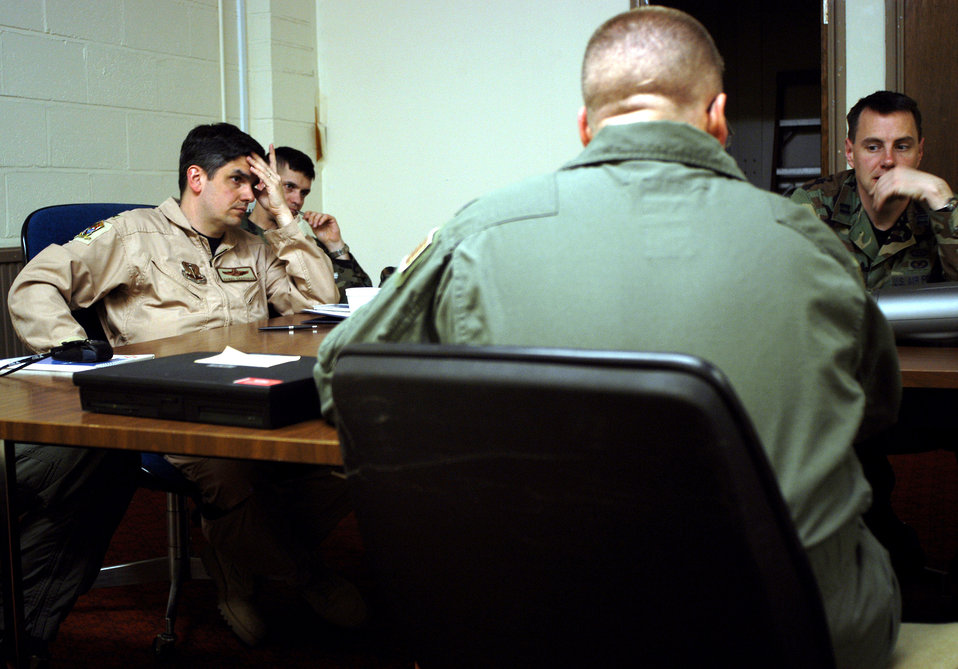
Charchian

OPERATION IRAQI FREEDOM -- Charchian listens to Lt. Col. Steve talk about a sensitive aircrew issue.